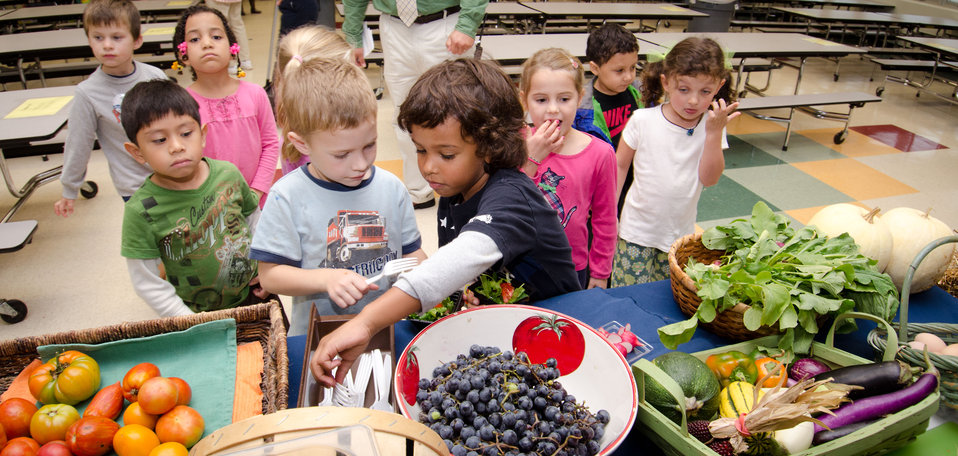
Students saw, touched and sometimes tasted produce that was new to them at Nottingham Elementary School in Arlington, VA, on Wednesday, October 12, 2011. Farmers from Bigg Riggs Farm in Hampshire County, WV, and Maple Avenue Market Farm in Vienna, VA were very popular with the students. Today's menu included roasted chicken, roasted butternut squash with dried cranberries, farm fresh mixed lettuce salad, turkey wraps, pita wedges, hot muffins, carrots, Asian pears and more.